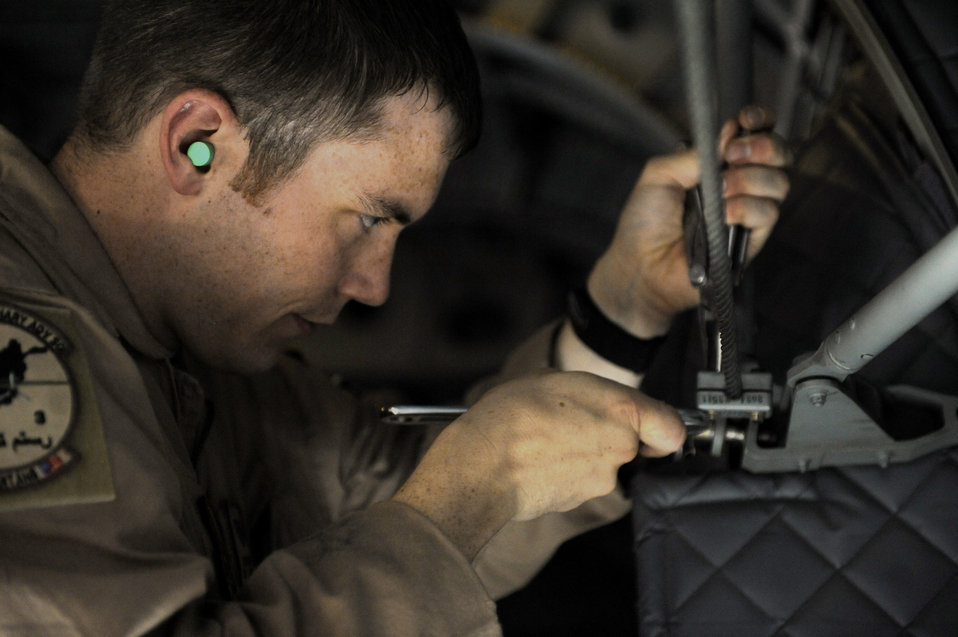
Getting it right

Staff Sgt. Talon Martin, 538th Air Expeditionary Advisory Squadron, secures a static line in a C-27 Spartan to prepare for an airdrop mission Aug. 26, 2010, over Kabul, Afghanistan. The members of the 538th AEAS are writing checklists for the C-27 to ensure the safety of their Afghan counterparts who will be using the aircraft.